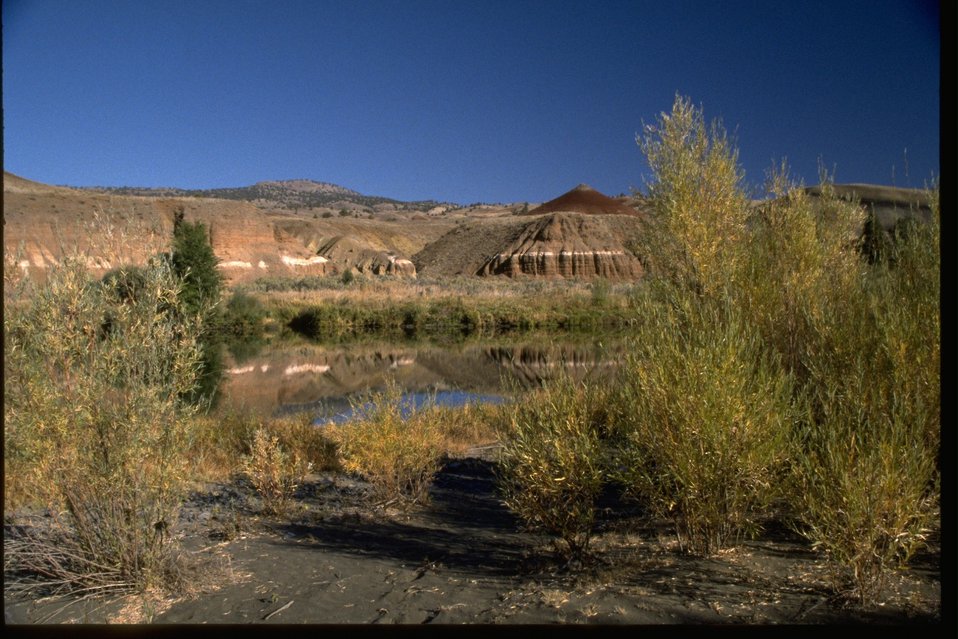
Riparian vegetation along the bank of the John Day River, near Bridge Creek.